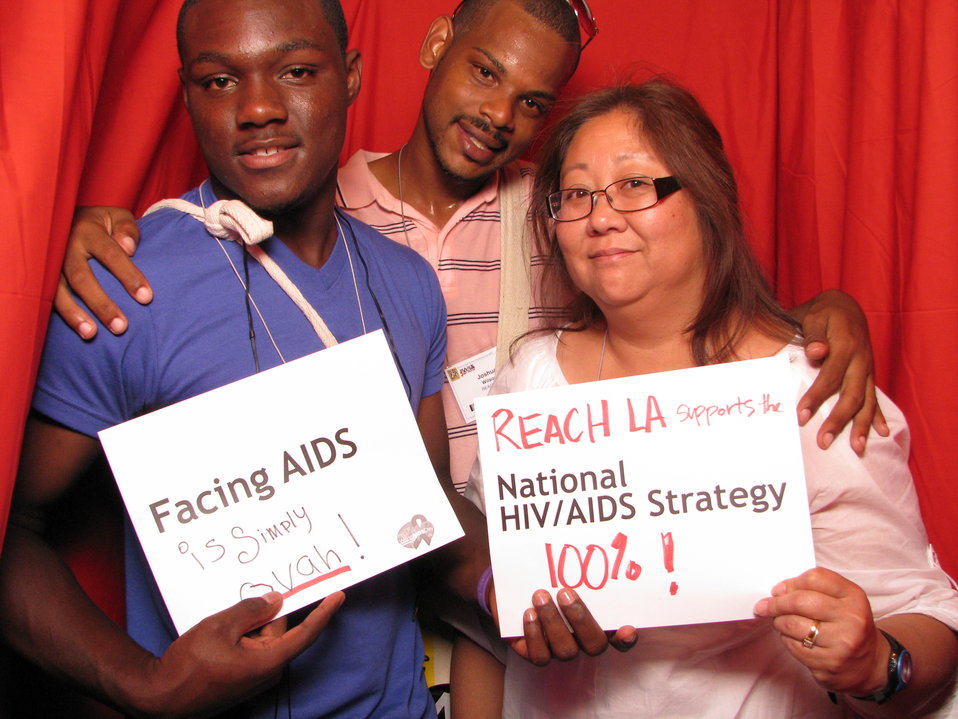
FACING AIDS is simply ovah! REACH LA supports the National HIV/AIDS Strategy 100%!

From the AIDS.gov photo booth at the U.S. Conference on AIDS, September 2010 (Orlando, FL).